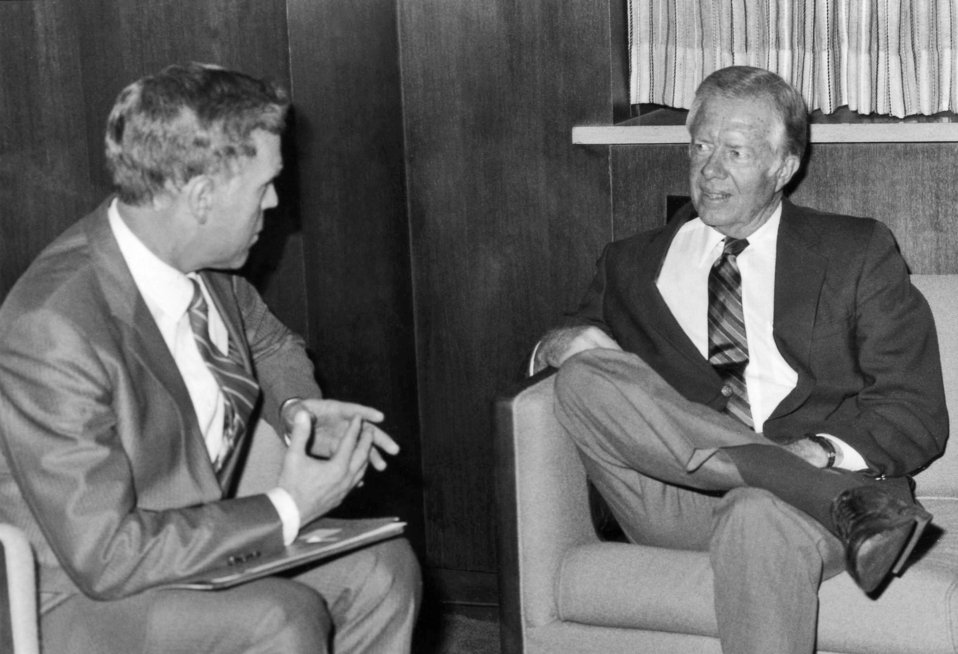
Former United States President Jimmy Carter (right) was shown here visiting with then Centers for Disease Control (CDC) Director, Dr. James O. Mason (1983-1989).